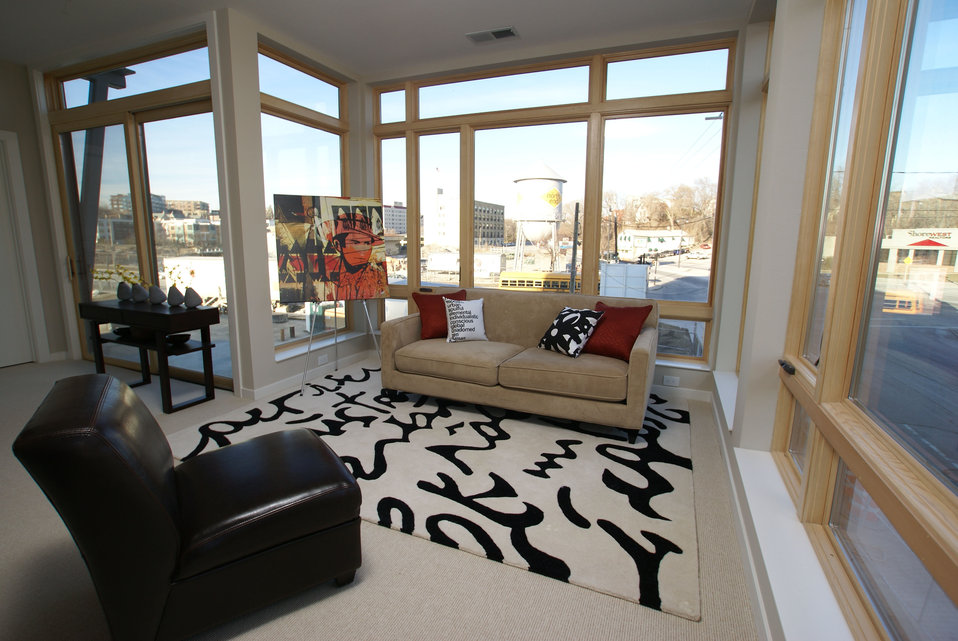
AFTER:Milwaukee, WI

Today, the site houses residential apartments, retail space, river walk and public open spaces.